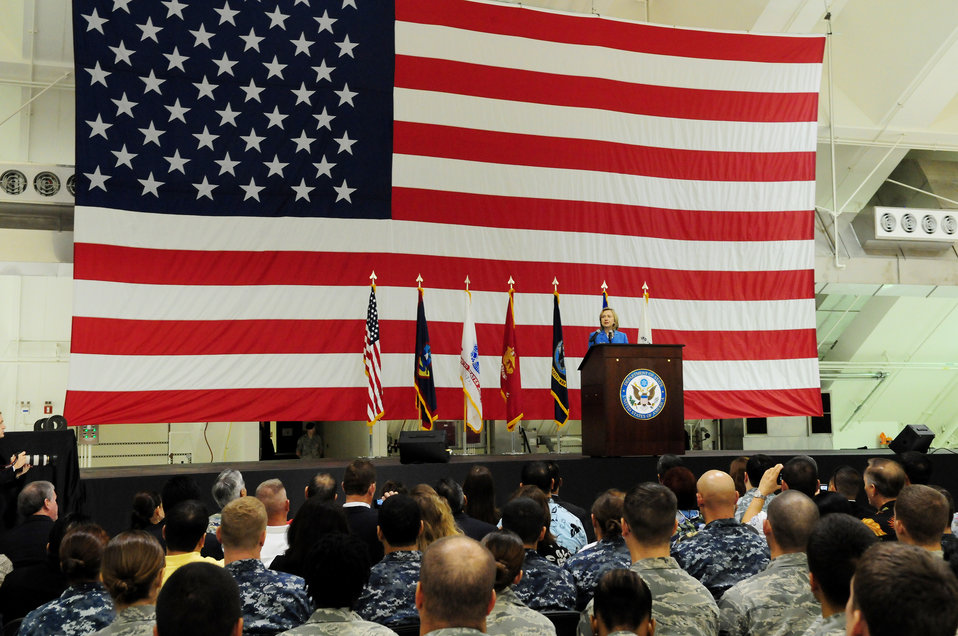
Secretary Clinton Speaks to Servicemembers

U.S. Secretary of State Hillary Rodham Clinton speaks to airmen, soldiers, sailors, and marines at Andersen Air Force Base in Guam on October 29, 2010.